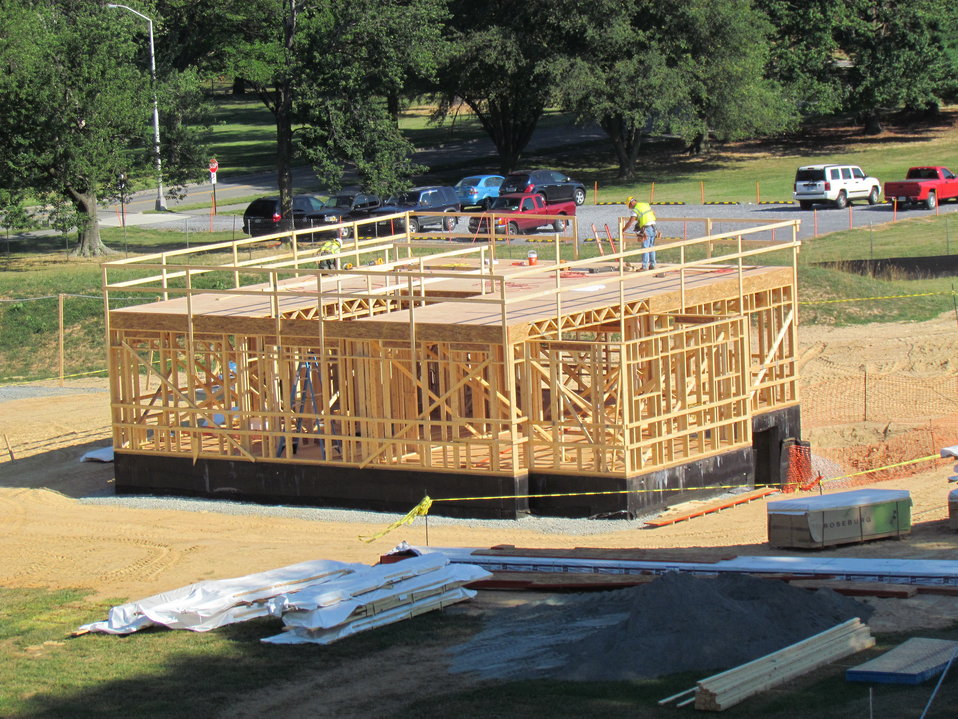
Net-Zero Energy Residential Test Facility - Photo showing first floor framing and installation of second floor sub floor.